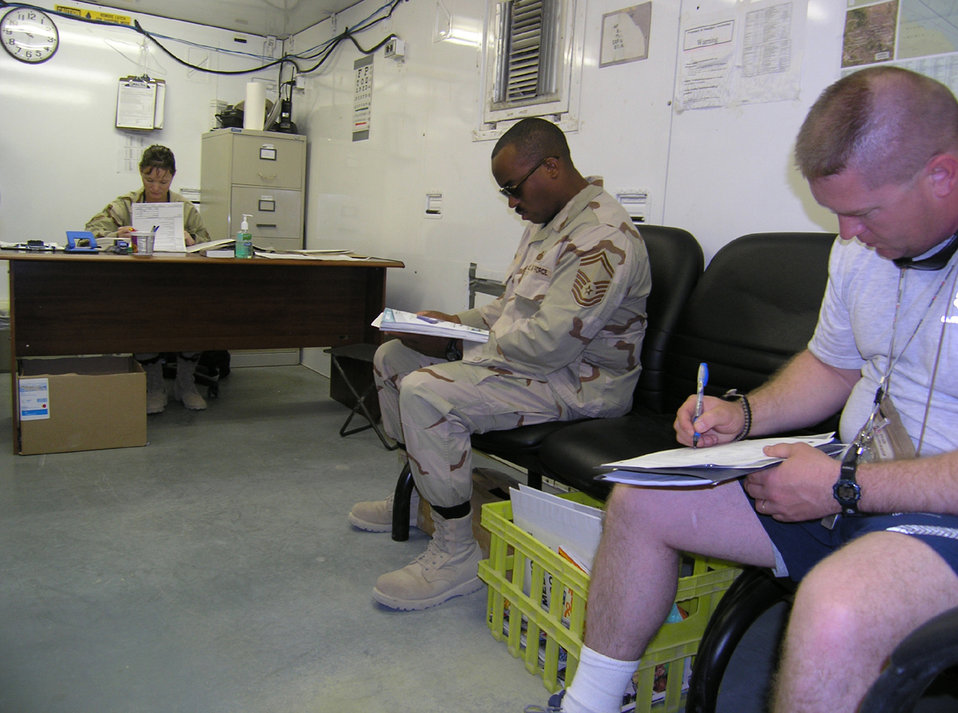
Operation Iraqi Freedom

ALI BASE, Iraq -- Senior Master Sgt. Glen Saxon (center) and Master Sgt. Timothy Vollmerhausen relax in the waiting area as Senior Airman Dora Sherrill (left) takes care of administrative tasks in the recently expanded base medical clinic here.